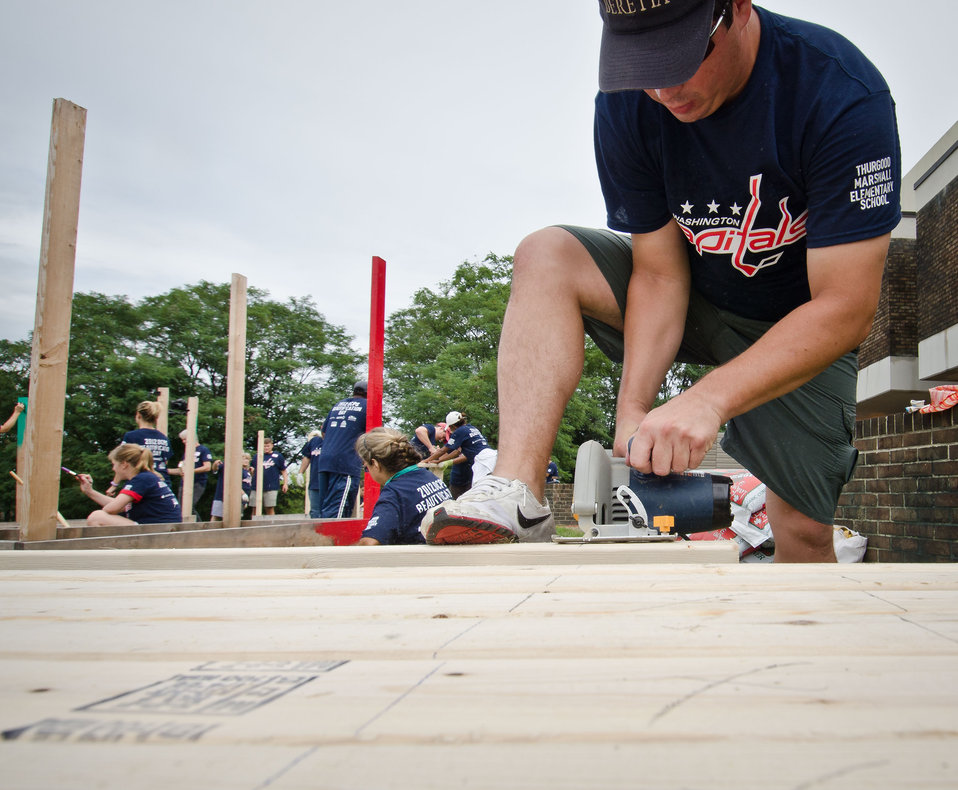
Dave Fitzpatrick cuts lumber to length for raised garden beds that U.S. Department of Agriculture (USDA) People’s Garden Executive Master Gardeners, friends, and family, along with Washington Capitals fans have vounteered to construct during District of Columbia Public Schools’ (DCPS) Beautification Day, on Saturday, August 25, 2012, at Thurgood Marshall Elementary School, in Washington, D.C. Each year people are invited to help “spruce up” public school facilities in preparation for the first day of school. More than 70 volunteers pitched in at this large school facility. The People’s Garden effort involves building and painting raised planter boxes, then preparing the soil mixture so they are “ready to grow.” Additionally, a team that includes descendants of U.S. Supreme Court Justice Thurgood Marshall assembles a prefabricated garden toolshed. The Justice’s son, John Marshall leads the team, which includes Brianna the Justice’s great-grand daughter in one of many multi-generational efforts at this school today. Washington Capitals Forward Mike Riberio, his family and mascot Slapshot participated in every project underway at Marshall School. From the outside gardens, to inside murals, and robotics worktable construction, the teams made their goals.